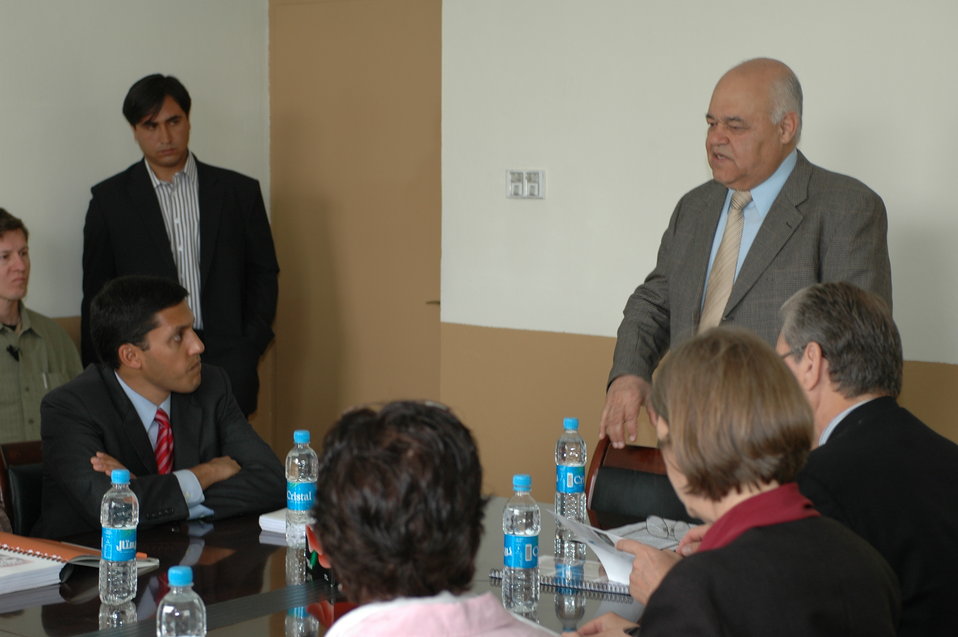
Dr Shah Visits Votech in Kabul